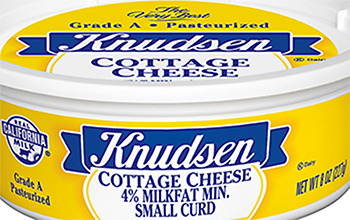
RECALLED – Cottage Cheese products

May 17, 2014 – Product Recall – Kraft Foods Group Voluntarily Recalls Select Cottage Cheese Products Due to Out-of-Standard Storage Temperatures
Certain Knudsen Cottage Cheese, Breakstone’s Cottage Cheese, Simply Kraft Cottage Cheese and Daily Chef Cottage Cheese Products Included in the Recall
.